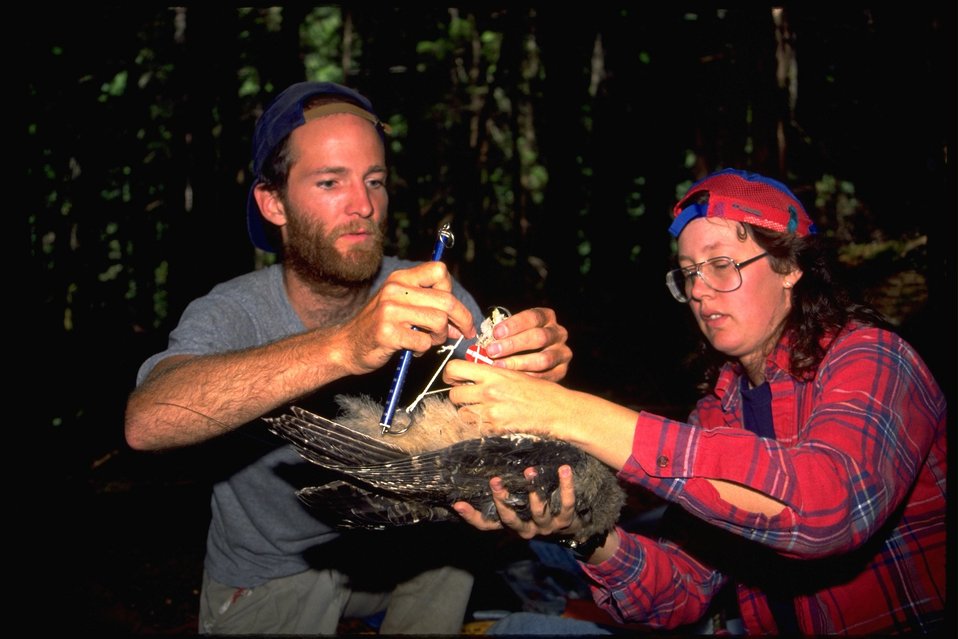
Bob and Paula weighing Northern Spotted Owl.